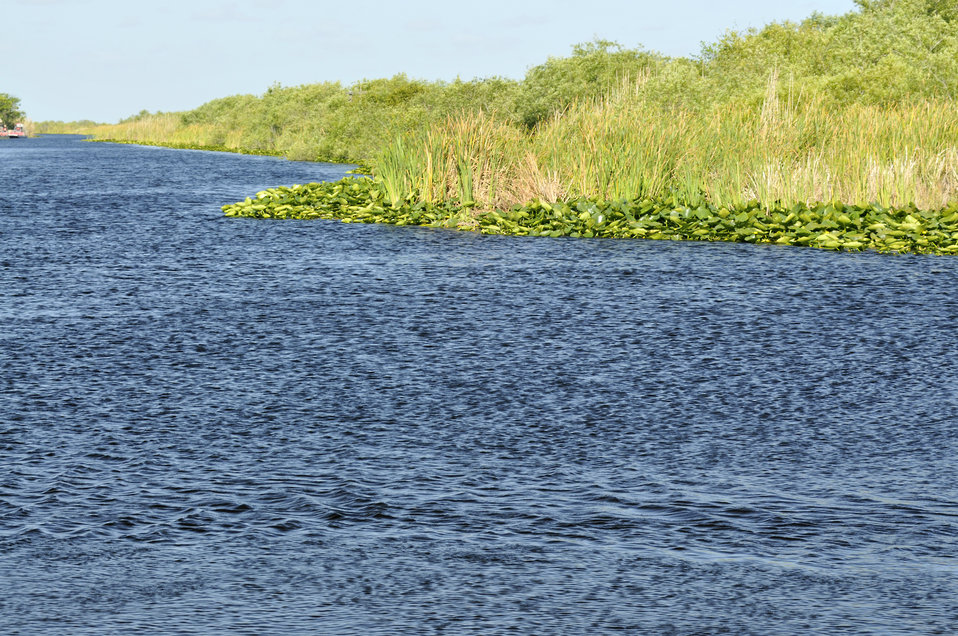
The U.S. Departments of Agriculture’s (USDA) Forest Service (FS) and U.S. Department of Interior’s (DI) National Park Service (NPS) work to preserve and restore the Everglades National Park on April 7, 2010. Water in south Florida once flowed freely from the Kissimmee River to Lake Okeechobee and southward over low-lying lands to the estuaries of Biscayne Bay, the Ten Thousand Islands, and Florida Bay. This intricate system evolved into a finely balanced ecosystem that formed the biological infrastructure for the southern half of the state. However, due to man’s interference the draining process to transform wetland to land ready to be developed severely damaged the ecosystem and the species it supported. With the support of many early conservationists, scientists, and other advocates, Everglades National Park was established in 1947 to conserve the natural landscape and prevent further degradation of its land, plants, and animals.